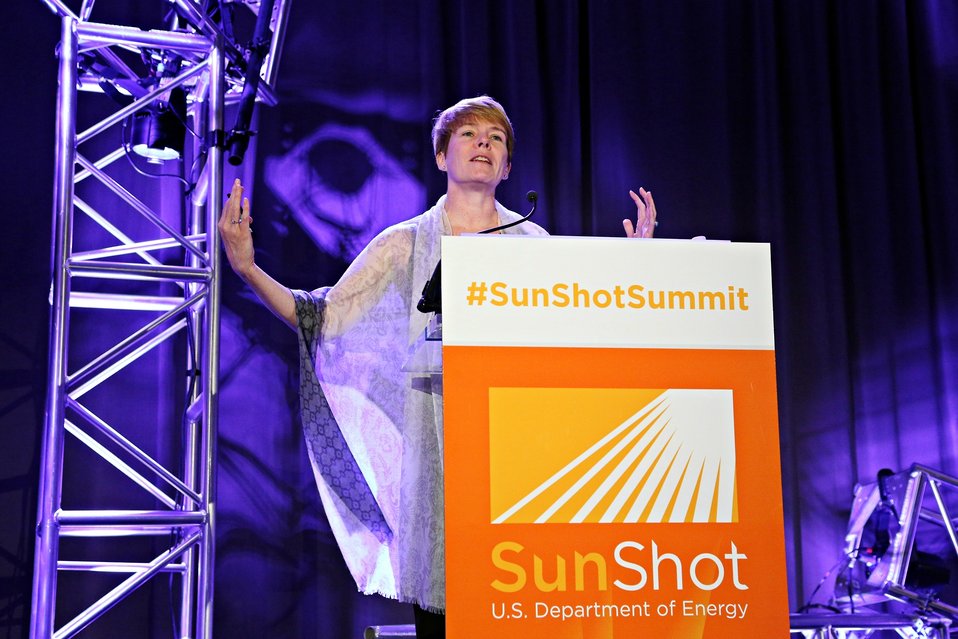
Keynote Session 2

Dr. Cheryl Martin, Director, Advanced Research Projects Agency-Energy delivers keynote on the transformative energy innovations made possible by initiatives like ARPA-E and SunShot.